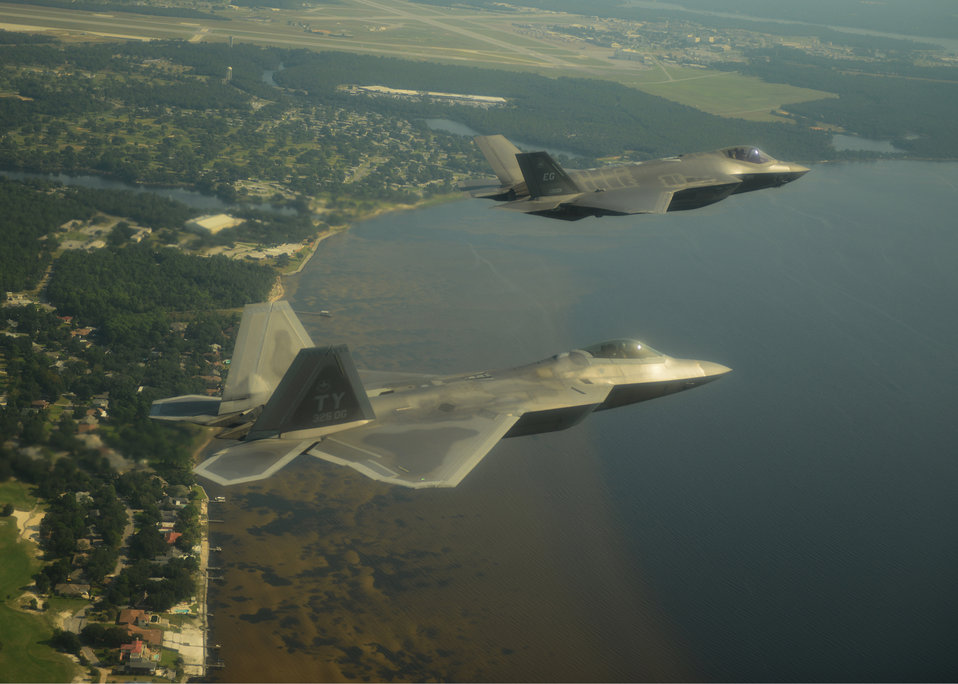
Fifth-generation formation

An F-22A Raptor, foreground, from the 43rd Fighter Squadron at Tyndall Air Force Base, Fla., and an F-35A Lightning II joint strike fighter from the 33rd Fighter Wing at Eglin Air Force Base, Fla., soar over the Emerald Coast Sept. 19, 2012. This was the first time the two fifth-generation fighters have flown together for the Air Force.